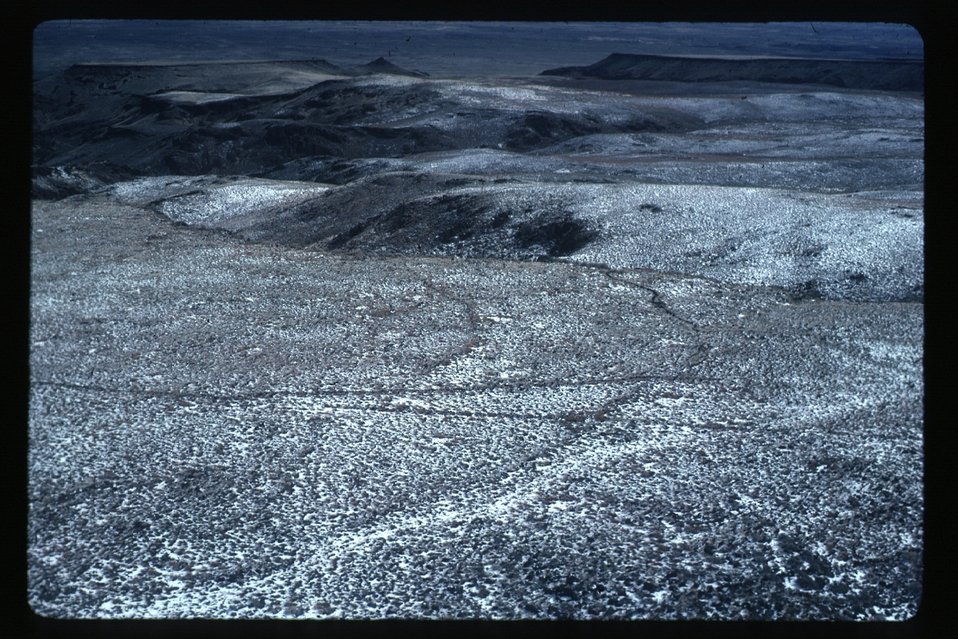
Shoofly Rock alignments Archeology LSRD Lower Snake River District